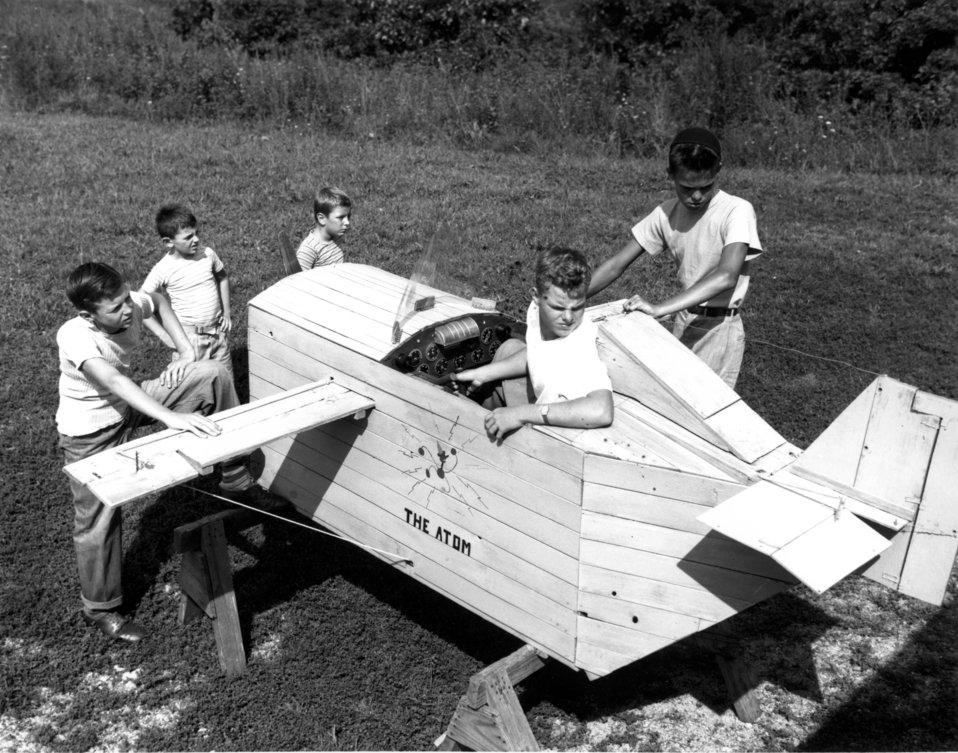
Recreation at Oak Ridge